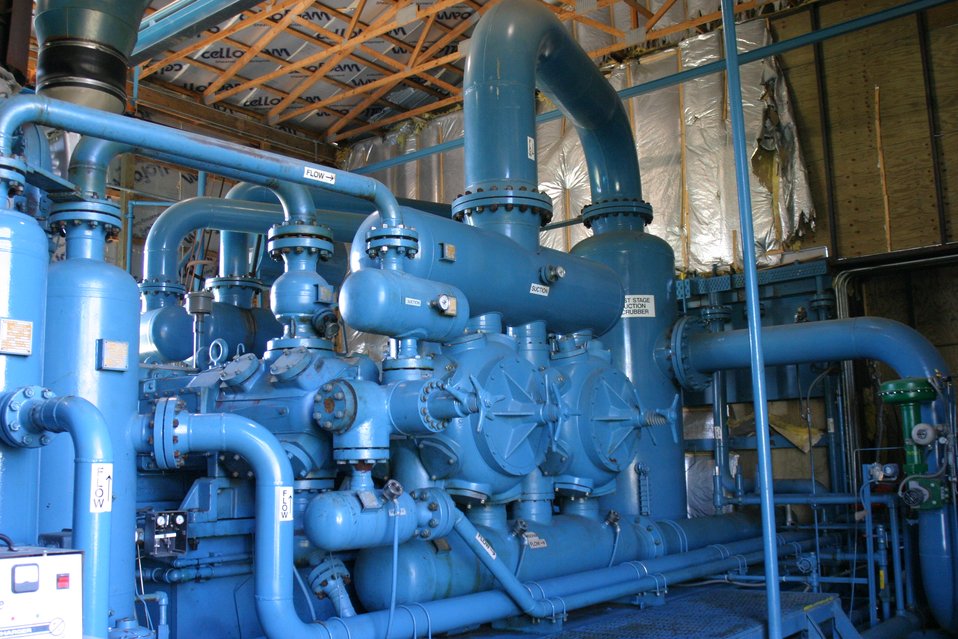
Enhanced Oil Recovery Facility located in Gaylord, Michigan. This facility includes separation and compression units for use in recovery and storage of CO2.